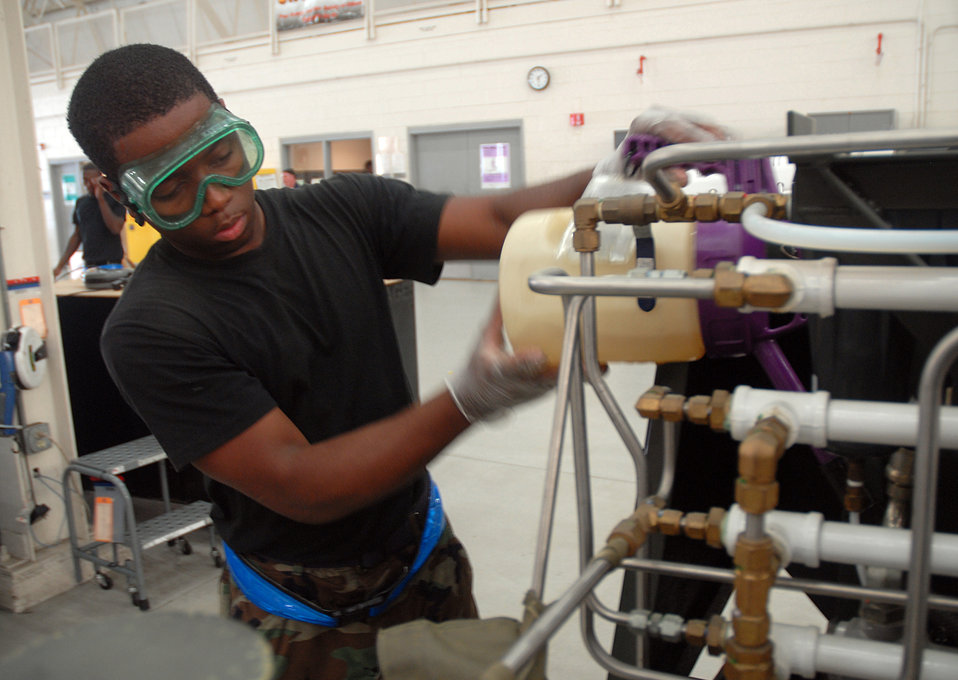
AFSO 21

Airman 1st Class Adrian Bozeman, an aerospace ground equipment apprentice with the 437th Maintenance Squadron AGE flight at Charleston Air Force Base, S.C., adds oil to a self-generating nitrogen servicing cart during a yearly inspection. Officials in the 437th MXG continue to look for ways to streamline maintenance tasks using the AFSO 21 process.